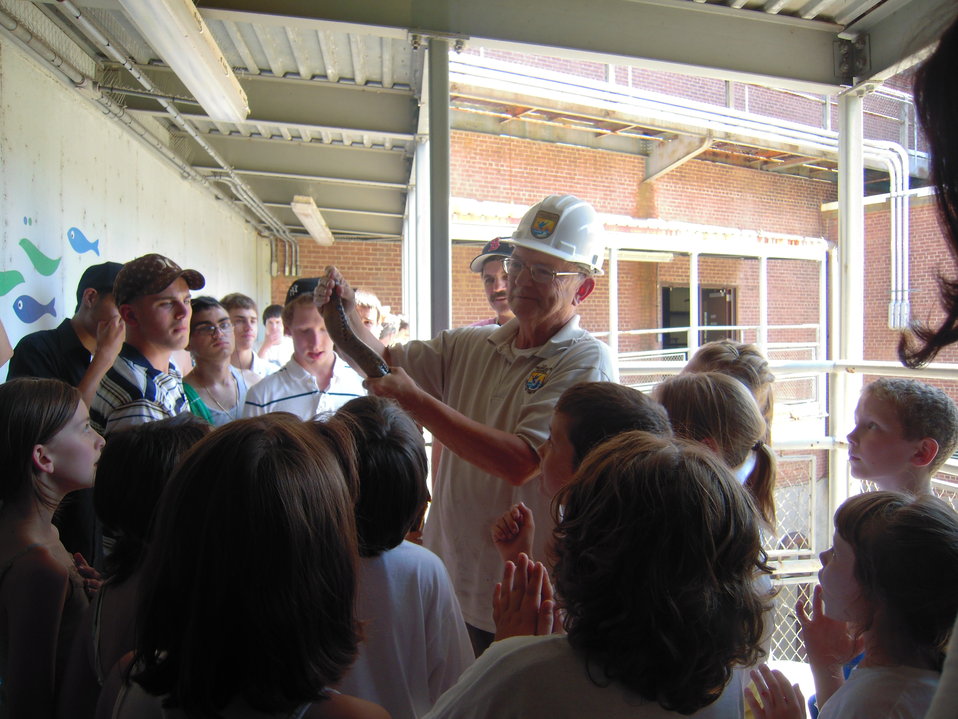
Gathered to see sea lamprey